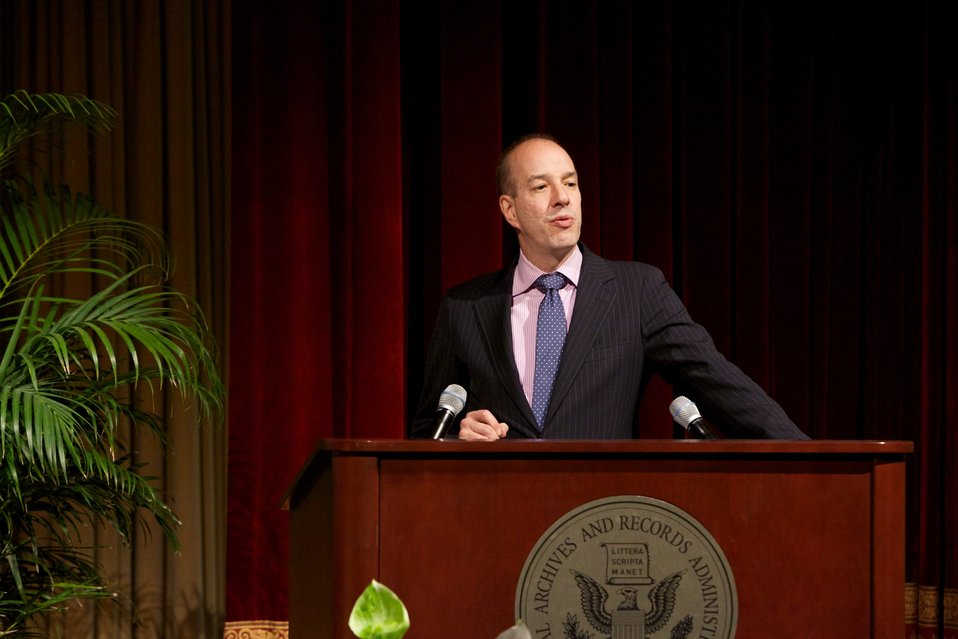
Brown at 60: Is Full Equality Within Our Grasp? A Conversation on Zero Tolerance, Segregation, and the Promise of Justice